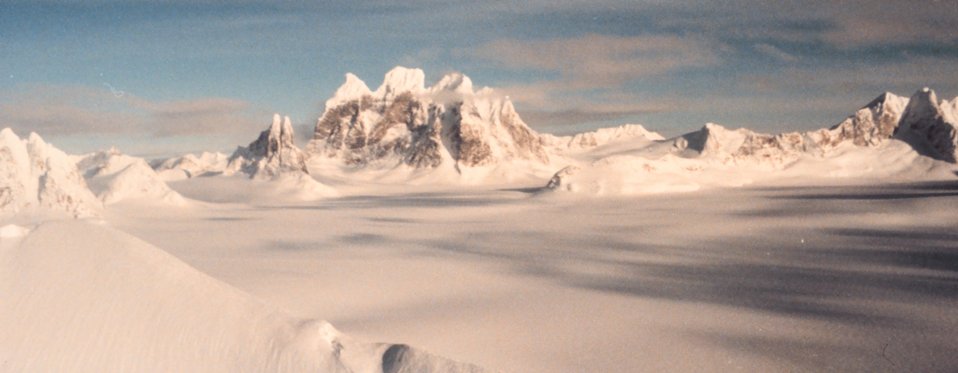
Taku Glacier after fall snows.